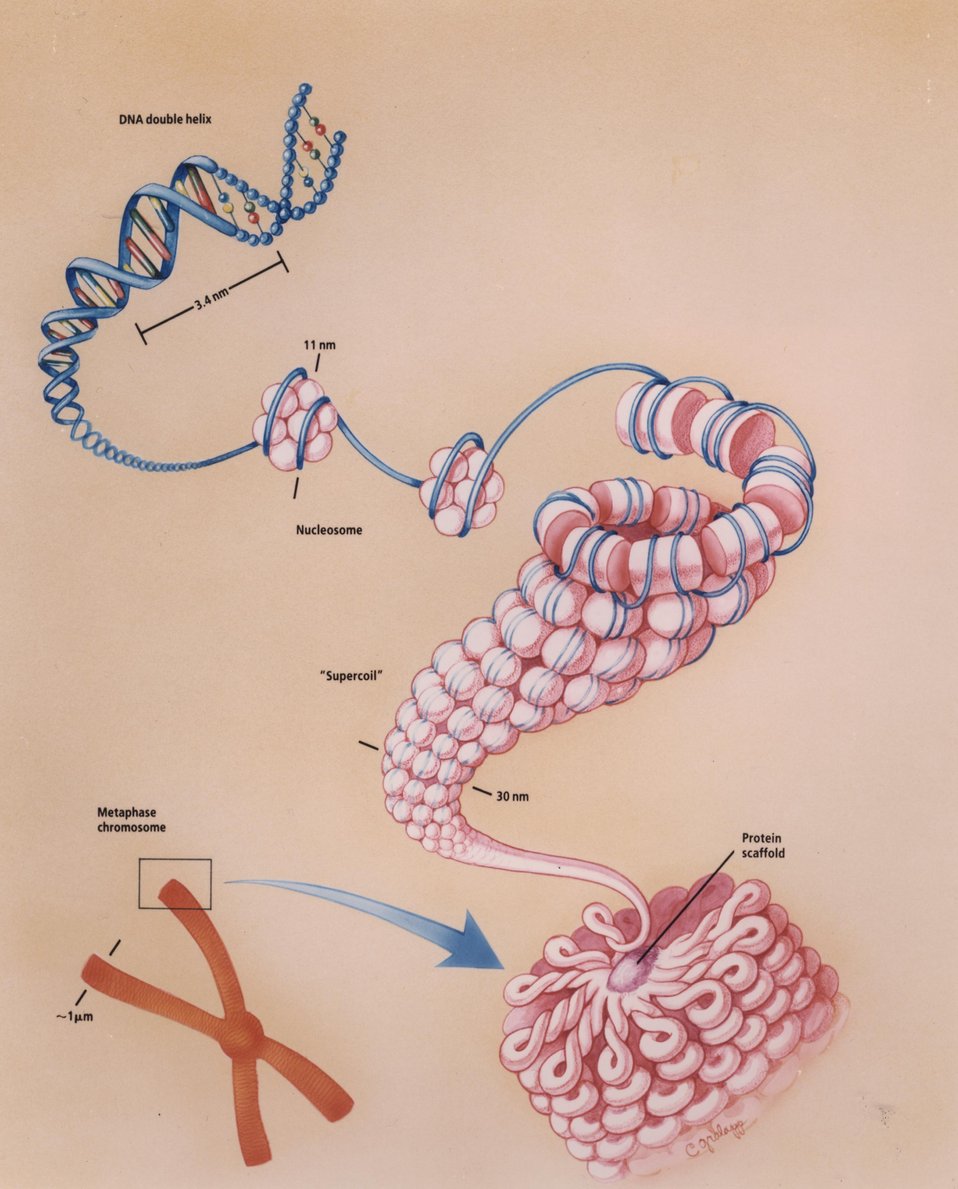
Layers of Complexity. The intervening levels of structural detail, between DNA's double helix and the chromosome.